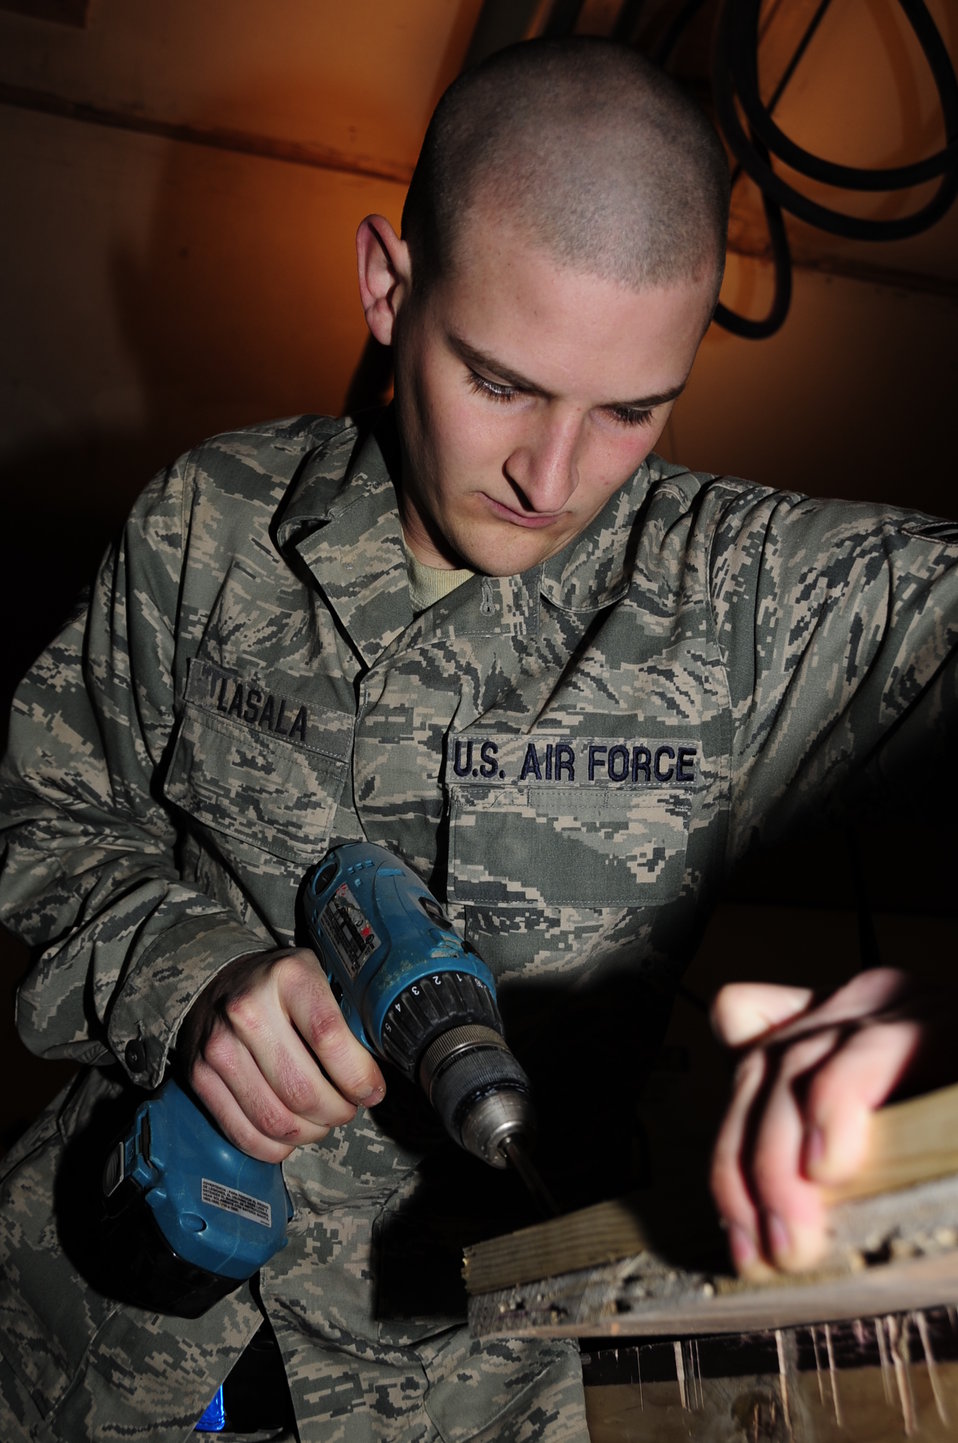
Ali Base drawing down

Airman 1st Class Cantley LaSala builds a crate Jan 7, 2010, for material that will be shipped from Ali Base, Iraq, to bases in Afghanistan. Airmen at Ali Base are beginning the drawdown of forces following directives to reduce the coalition forces footprint in Iraq by August 2010. Airman LaSala is assigned to the 407th Expeditionary Civil Engineer Squadron.